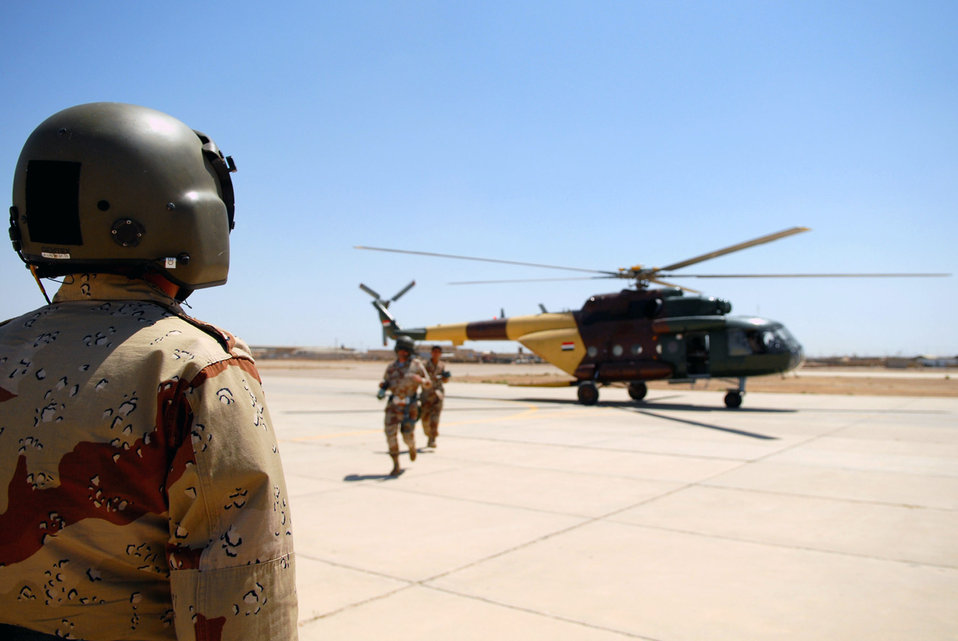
Airmen help Iraqi air force become self-sustaining service

Iraqi air force aerial gunner trainees exit an Mi-17 multirole helicopter after a training mission May 29 at Camp Taji, Iraq. The six-week aerial gunner training course is lead by American Airmen with the 770th Air Expeditionary Advisory Squadron.